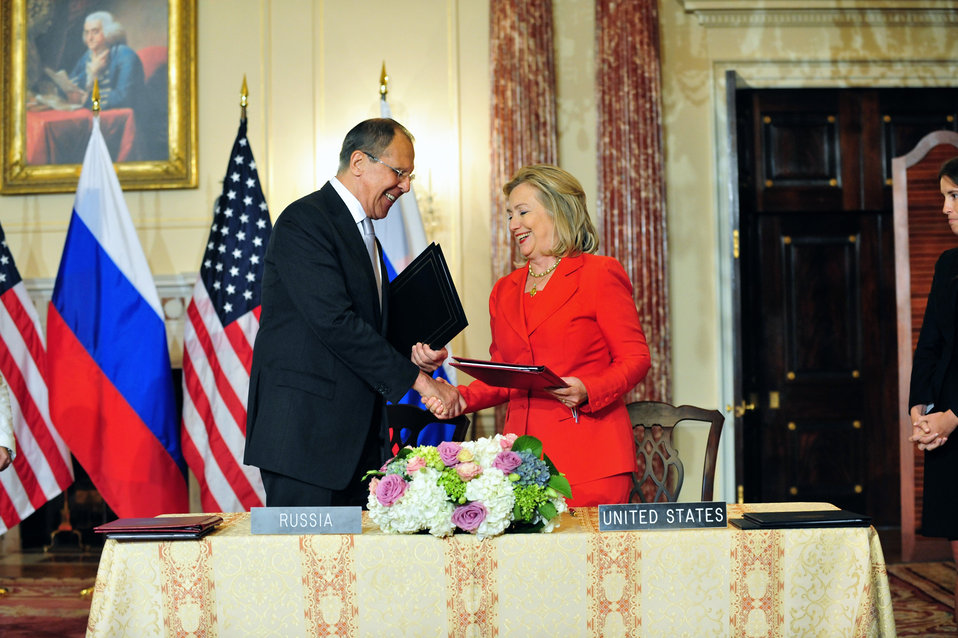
Secretary Clinton Shakes Hands With Russian Foreign Minister Lavrov

U.S. Secretary of State Hillary Rodham Clinton shakes hands with Russian Foreign Minister Sergey Lavrov after a signing ceremony at the U.S. Department of State in Washington, D.C., on July 13, 2011.